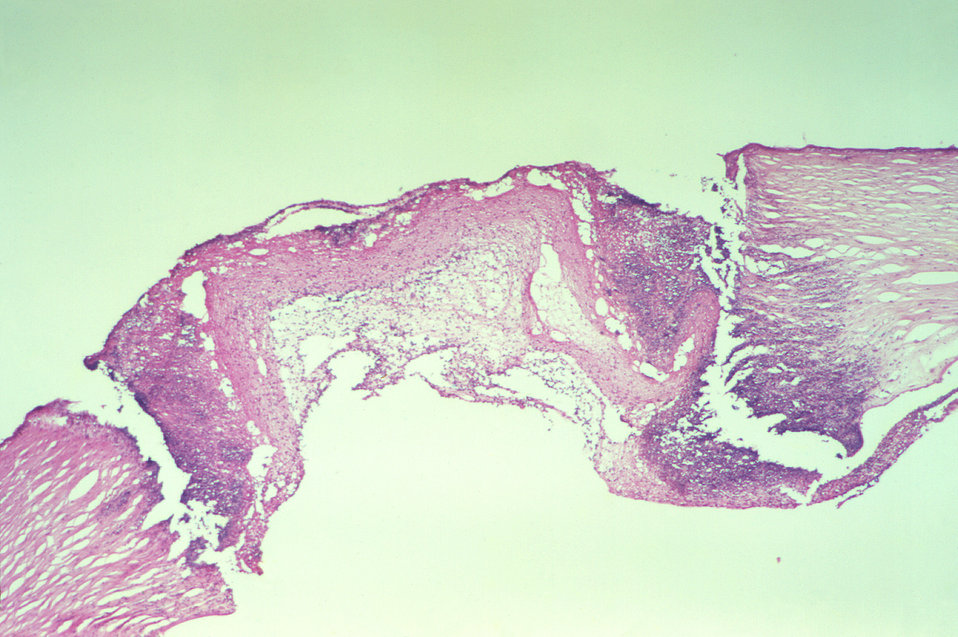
Under a very low magnification of only 25X, this photomicrograph revealed some of the ultrastructural cytoarchitectural histopathology found at the site of a corneal lesion caused by what was determined to be saprophytic Tritirachium roseum fungal organisms. This corneal tissue sample was stained using hematoxylin and eosin (H&E) stains in order to highlight the tissue's histopathologic changes.